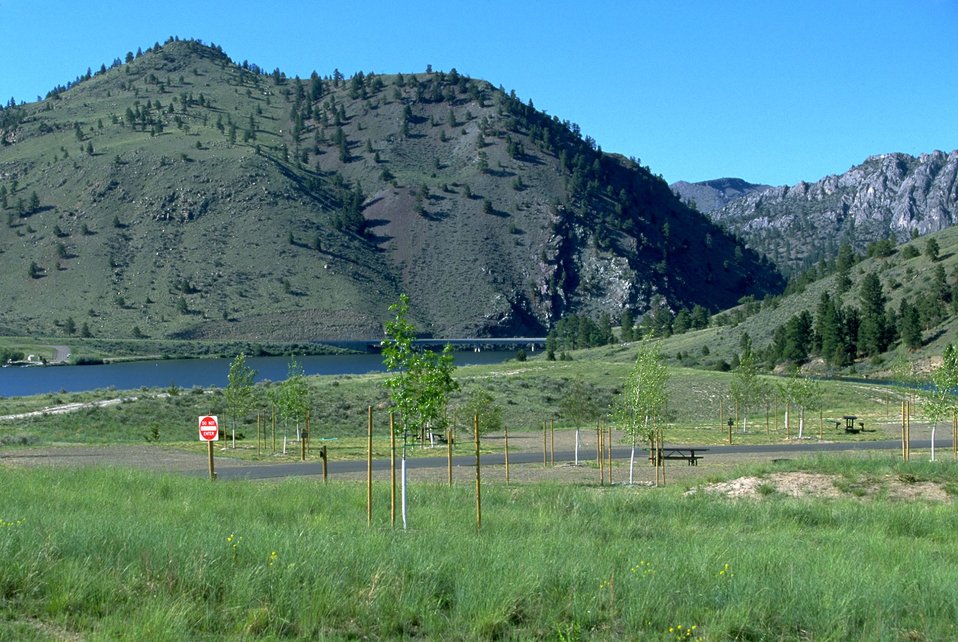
View of Devils Elbow Campground with York Bridge in background